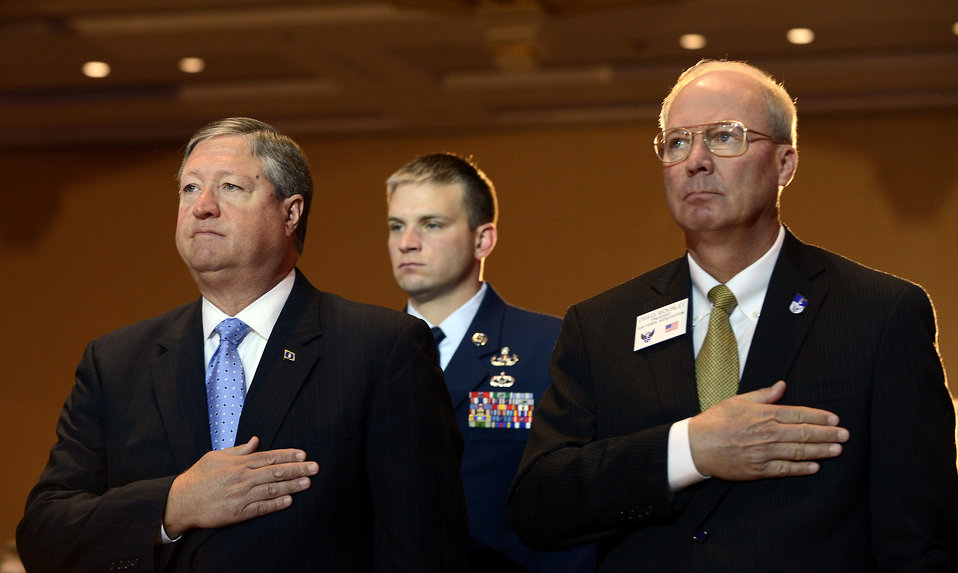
AFA conference kicks off

Secretary of the Air Force Michael Donley and retiring Gen. Craig McKinley, the incoming president of the Air Force Association, witness the opening ceremonies during the Air Force Association's Air and Space Conference and Technology Exposition in Washington, D.C., Sept. 17, 2012.